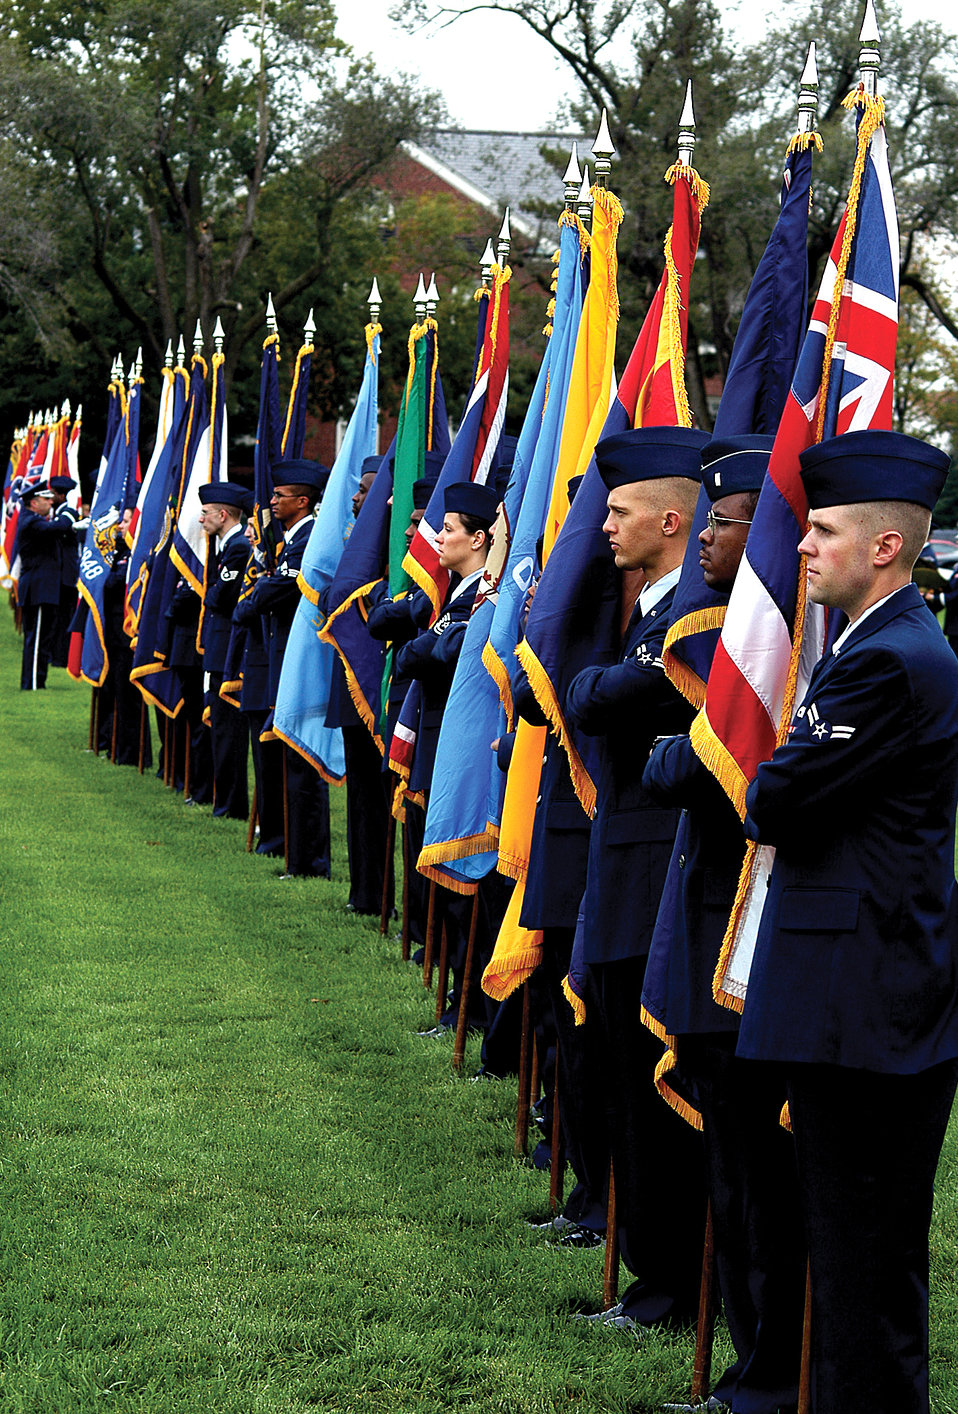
Flag bearers

SCOTT AIR FORCE BASE, Ill. -- Airmen bear flags of the 50 states during the 18th Air Force reactivation ceremony Oct. 1 on the parade field here.